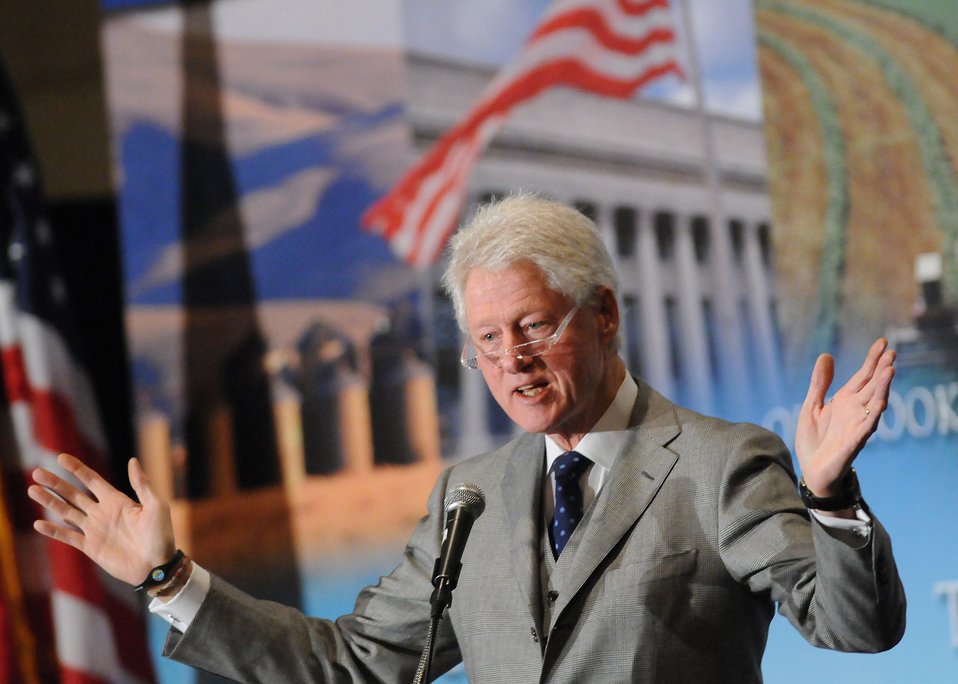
Former President Bill Clinton makes remarks at the World Agricultural Outlook Board Forum in Arlington, VA on Thursday, February 24, 2011.